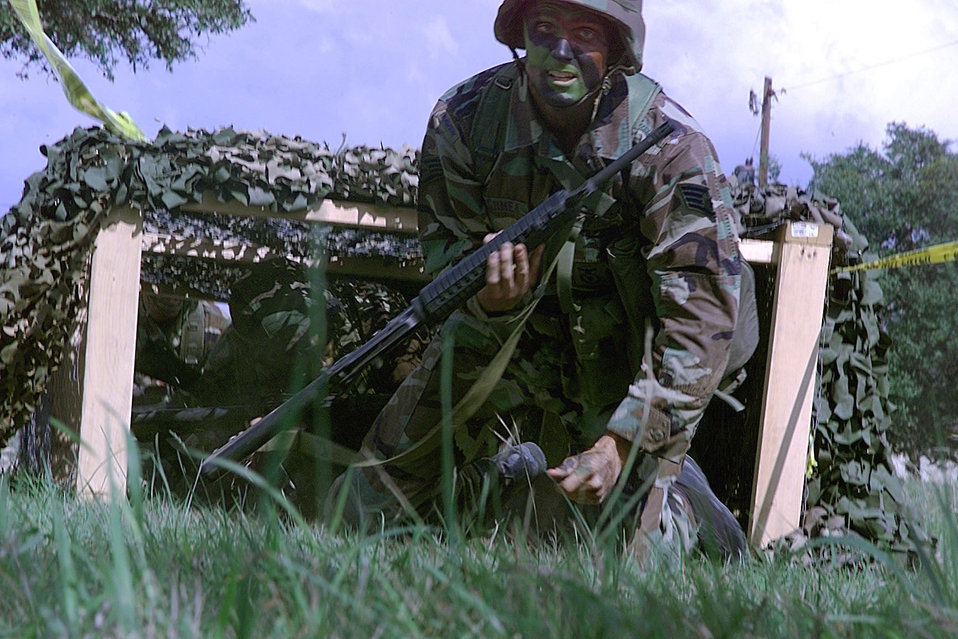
Low crawl

LACKLAND AIR FORCE BASE, Texas -- Staff Sgt. Guy Dashnea emerges from the low crawl obstacle with teammates close behind in the Combat Rifle competition event of Defender Challenge 2000 on Oct. 31, 2000. Defender Challenge is the annual Air Force competition sponsored by Air Force Security Forces. This competition showcases the talents and capabilities of 13 international Security Forces teams in seven physical fitness events, base defense and policing skills over six days.